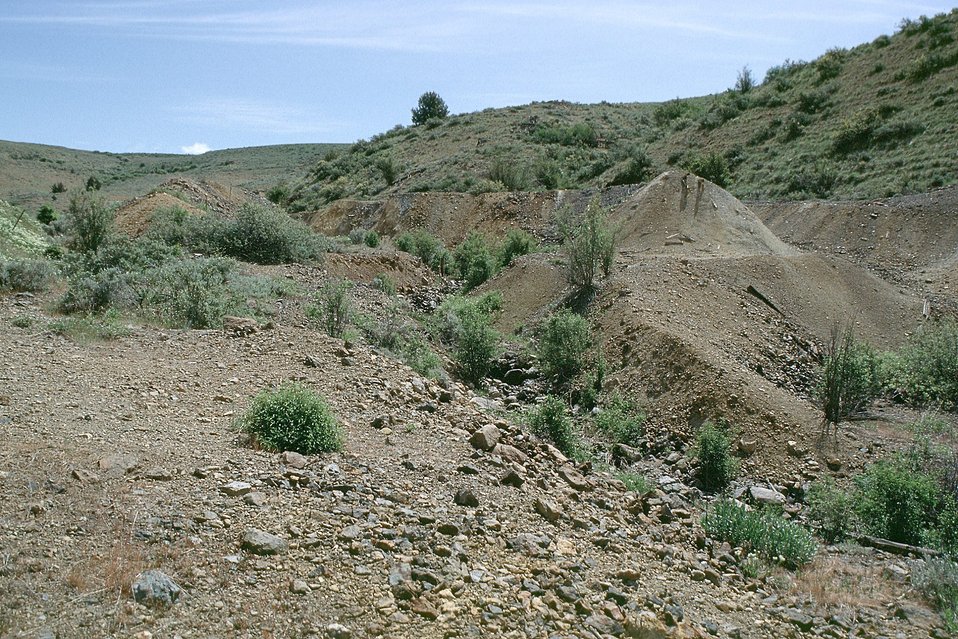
AML Poorman, Vale District, Oregon. Repository.